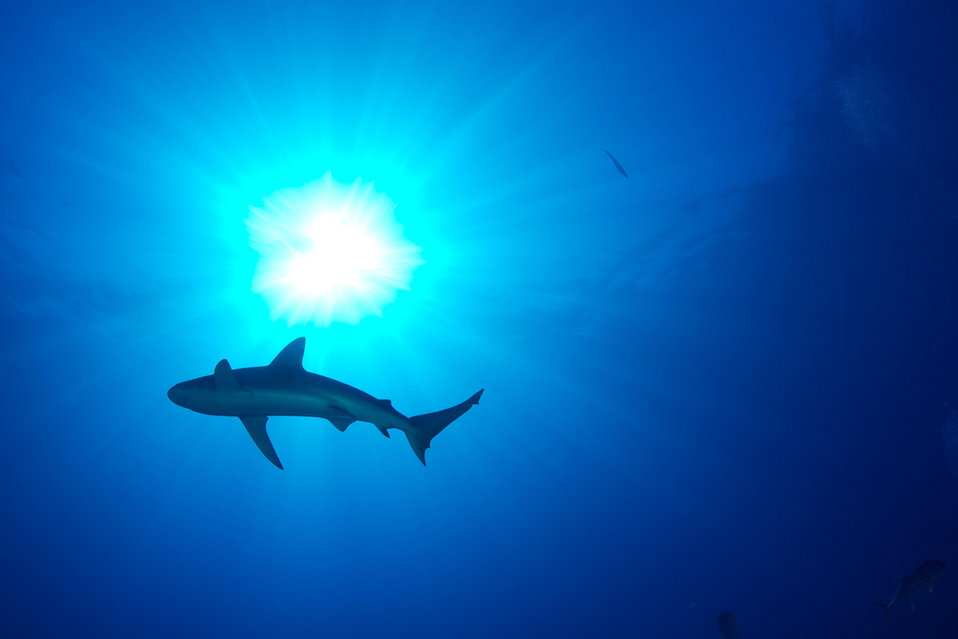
Shark, Kronos Reef

The artist Wyland photographed this shark while diving on Kronos Reef with Dr. Sylvia Earle and others.
Midway Atoll National Wildlife Refuge
Papahānaumokuākea Marine National Monument
January 2012
(Photo: Wyland)

Celebrating a New Year. In January, 2012, Service employees prepared to start another year dedicated to conservation and preservation.